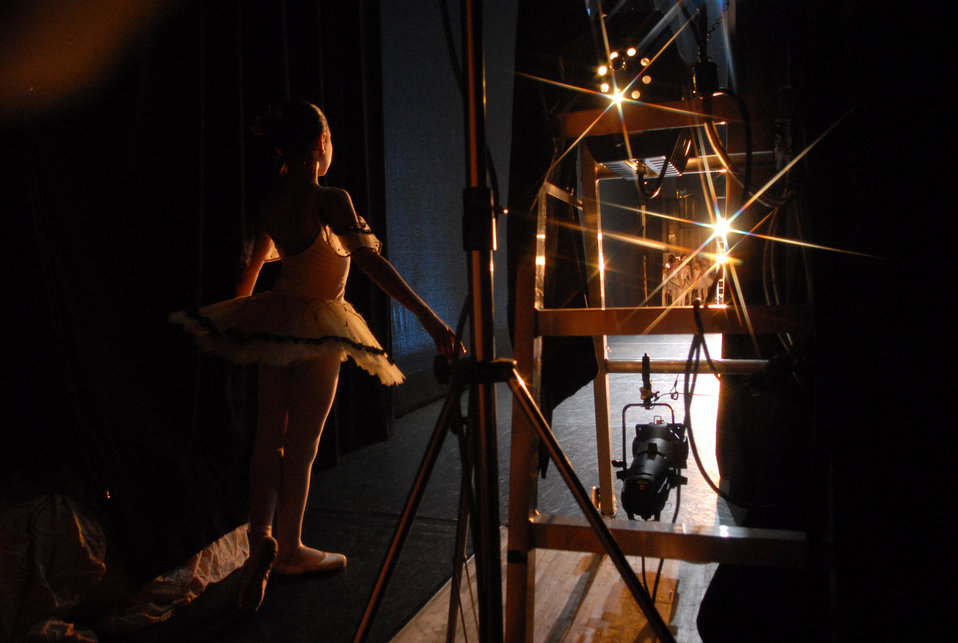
Ballerina at backstage.